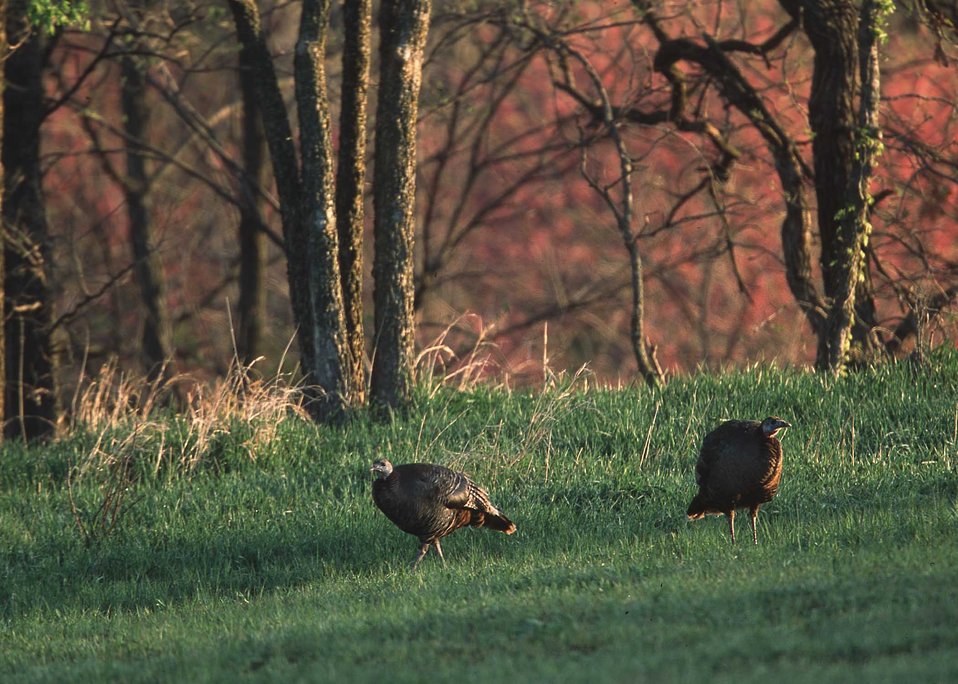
Wild turkeys in farm field near Manhattan, Kansas.